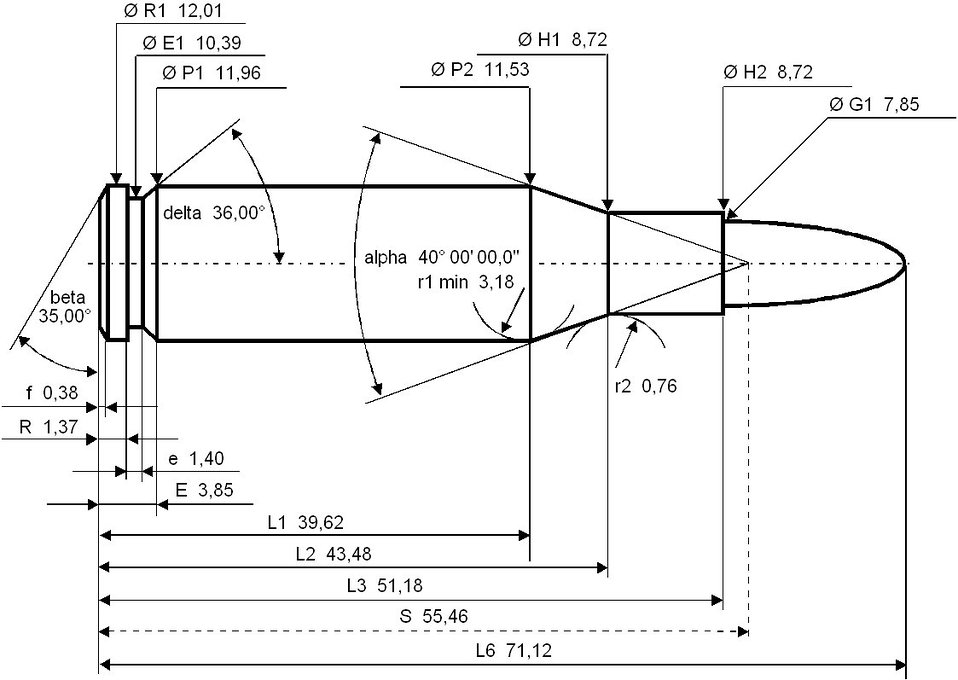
.308 Winchester maximum C.I.P. cartridge dimensions. All sizes in millimeters (mm).